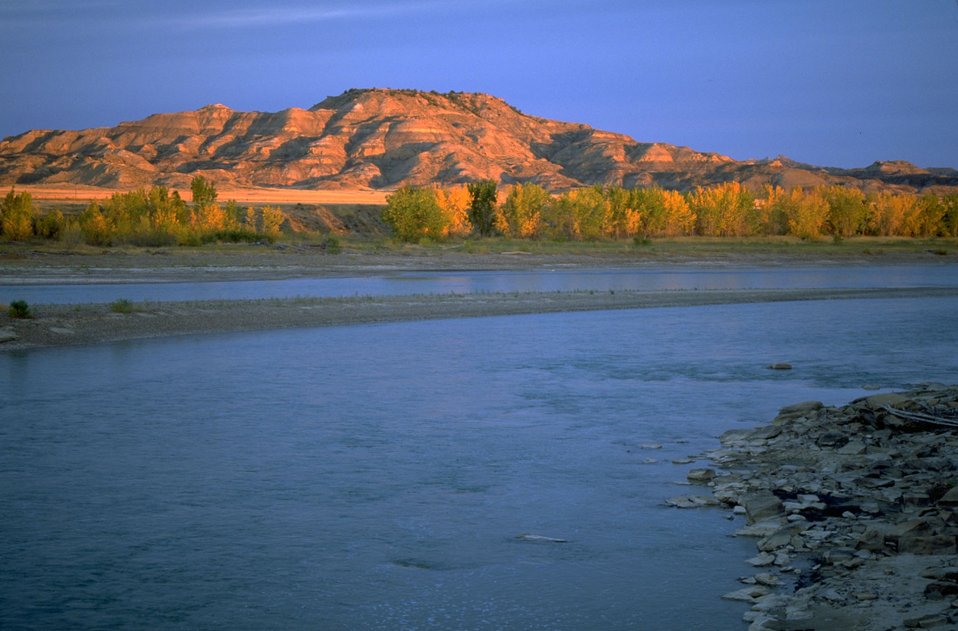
Sheridan Butte in the Terry Badlands Wilderness Study Area